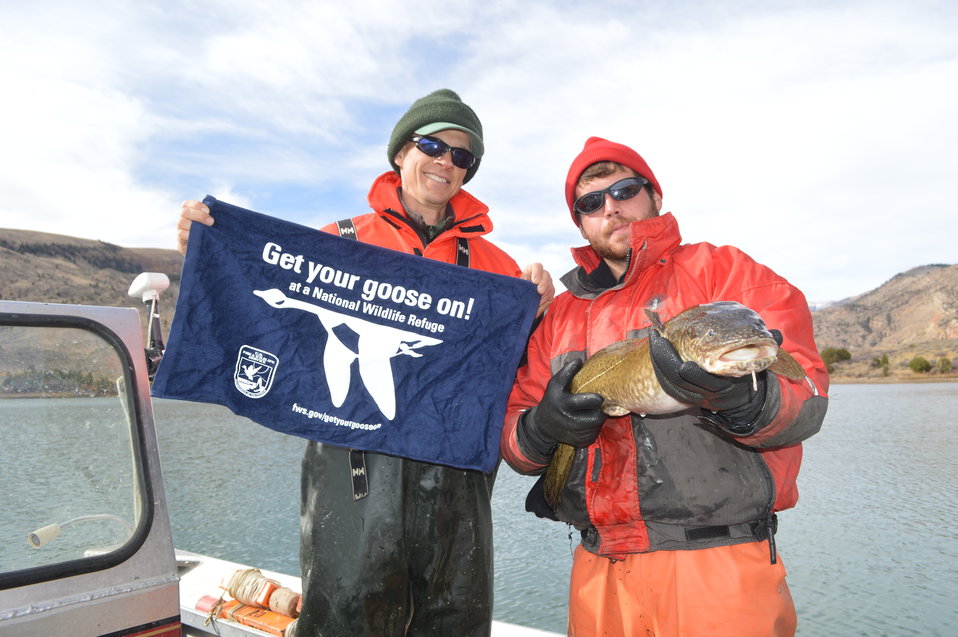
Get your Goose on for Burbot!